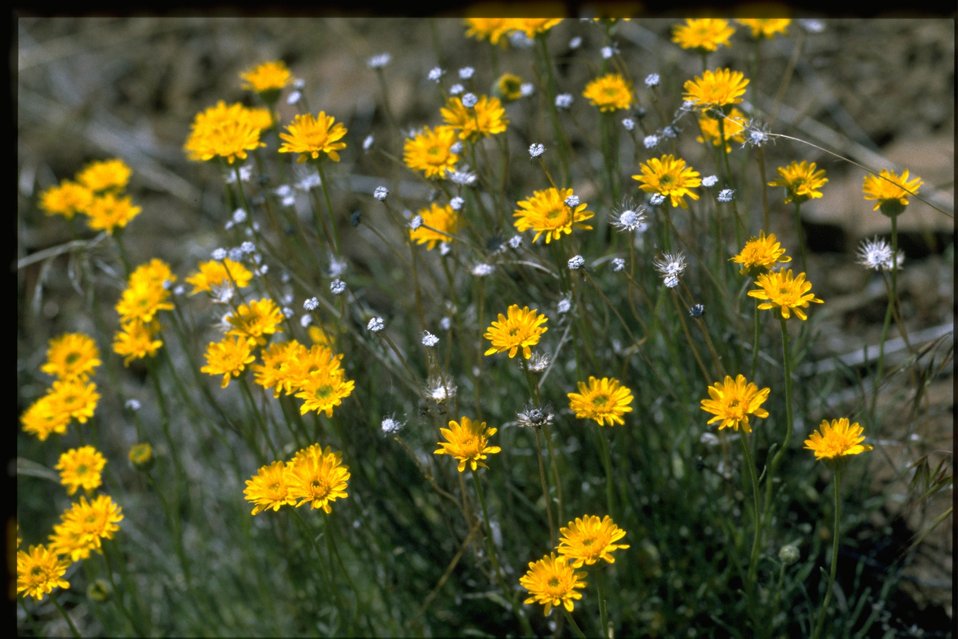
Medium shot of desert yellow fleabane (Erigeron linearis).